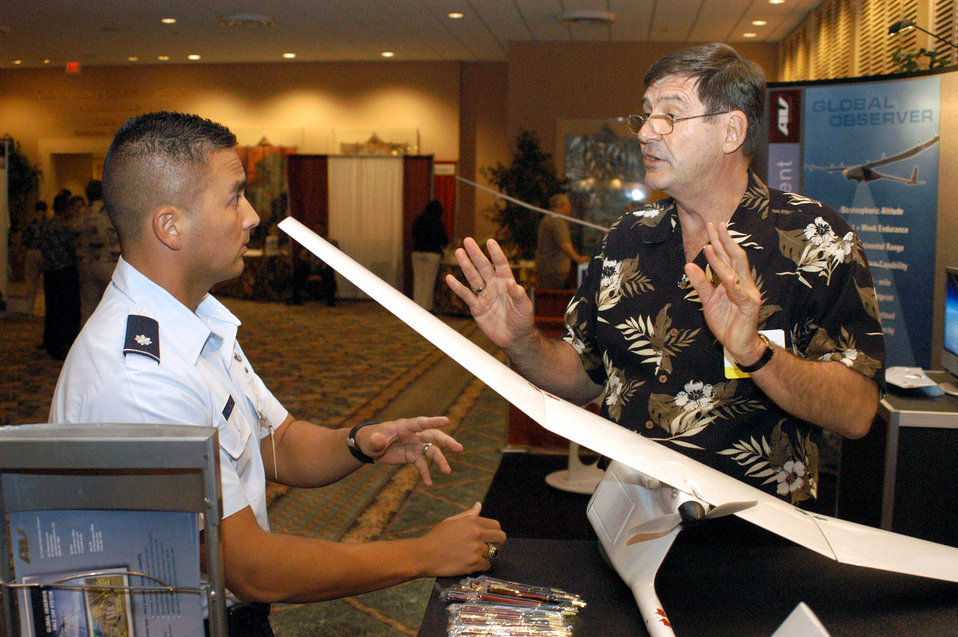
Commander challenges technologists for better solutions

Lt. Col. Chris Sullivan discusses the Raven unmanned aerial vehicle with Ted Wierzbanowski of AeroVironment at the Pacific Operational Science and Technology Conference and Exhibition April 3. Colonel Sullivan is a contingency planner for 13th Air Force from Hickam Air Force Base, Hawaii.